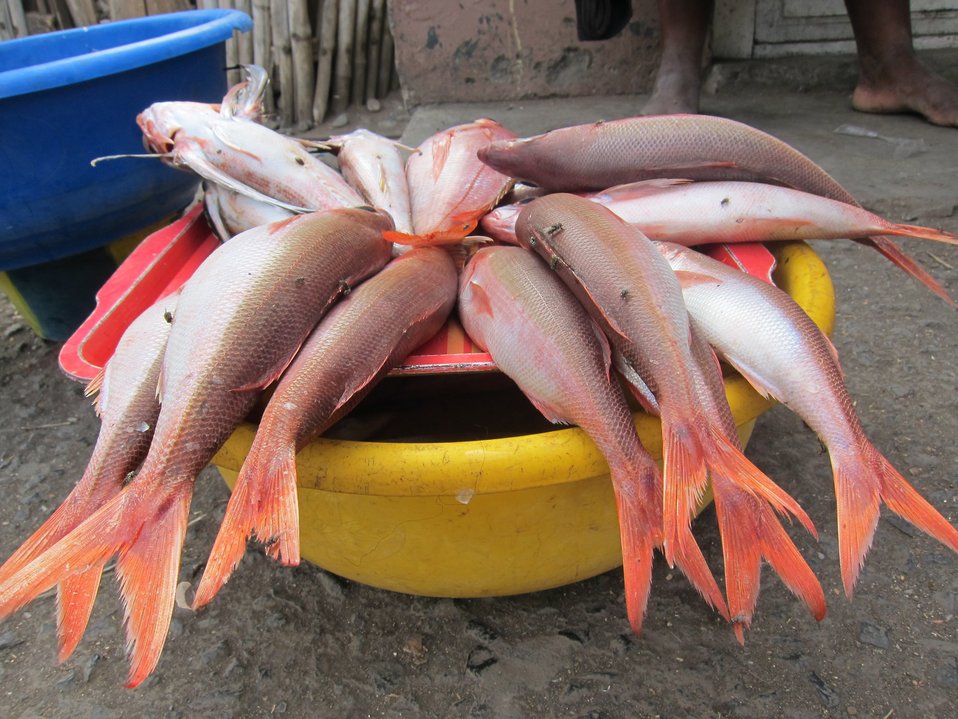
Fish for sale at Sao Tomean street market